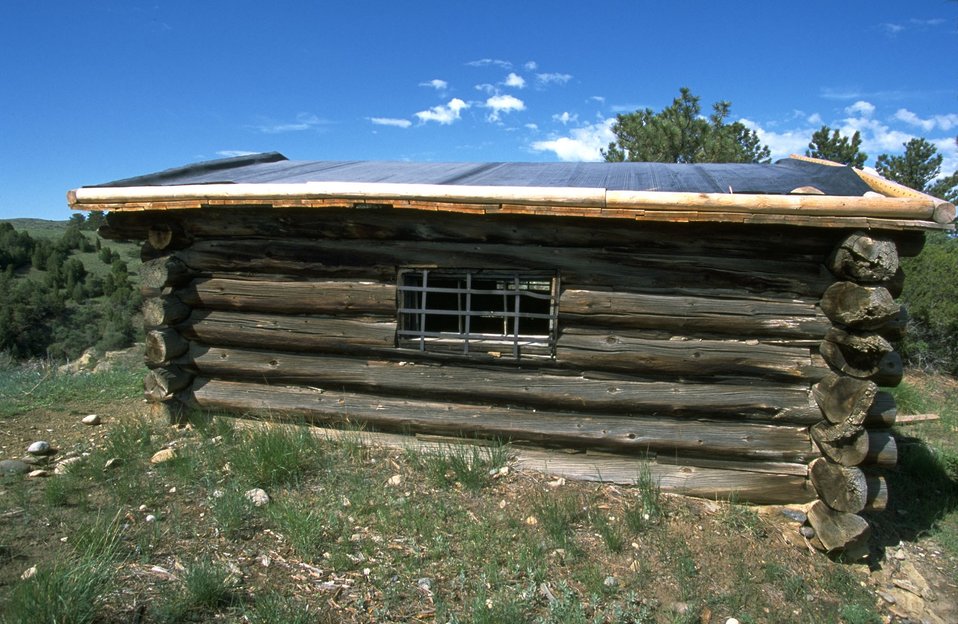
East side of the Will James log cabin in the Four Dances Natural Area